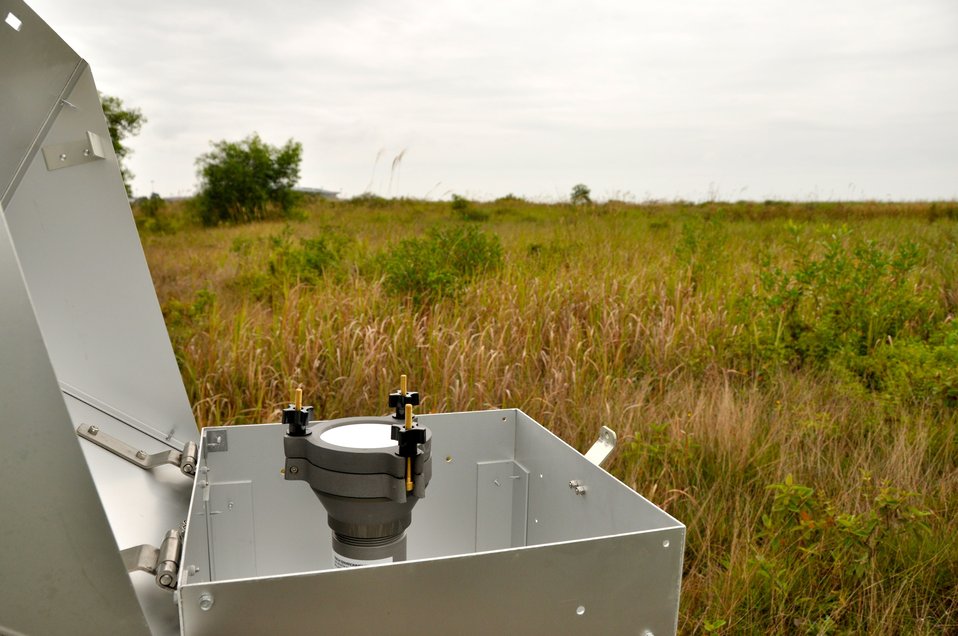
Site Preparation for Environmental Remediation of Dioxin Contamination at Danang Airport

Danang Airport, January 22, 2013